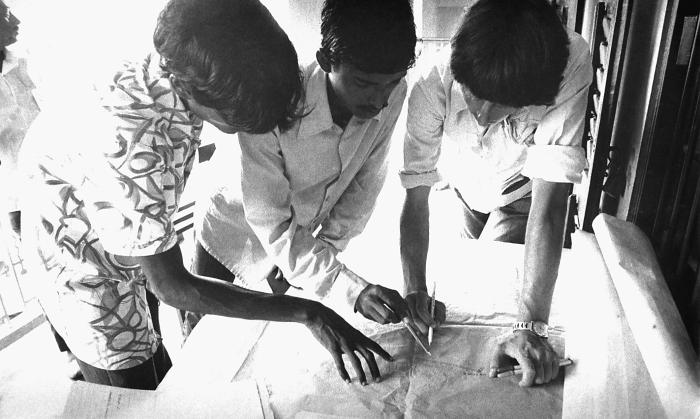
This 1975 photograph depicted a number of smallpox eradication team members huddled around a village 'infection map', which reflected the geographic layout of the numbered homes, the homes that had already been visited, and where cases had been located. This map was used in conjunction with lists that were compiled describing all of the village inhabitants, who was ill with the disease, and all those living in and around each home. Using these lists, and the map, team members could track, and follow up with vaccinees, and those that were ill, which was integral to the success of the eradication efforts. Once located, those individuals who had left the immediate area were examined, and findings were communicated back to the team leads by way of smallpox radio notifications.